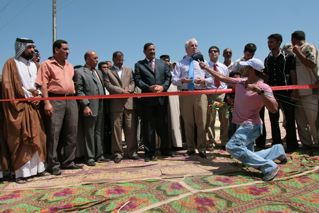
PRT Karbala Team Leader John Kincannon Comments to the Media

PRT Karbala Team Leader John Kincannon comments to media at the Ribbon Cutting ceremony marking the completion of Khairat and Gharby Roads which link two sub-districts of Karbala Province, Iraq, August 13, 2009.